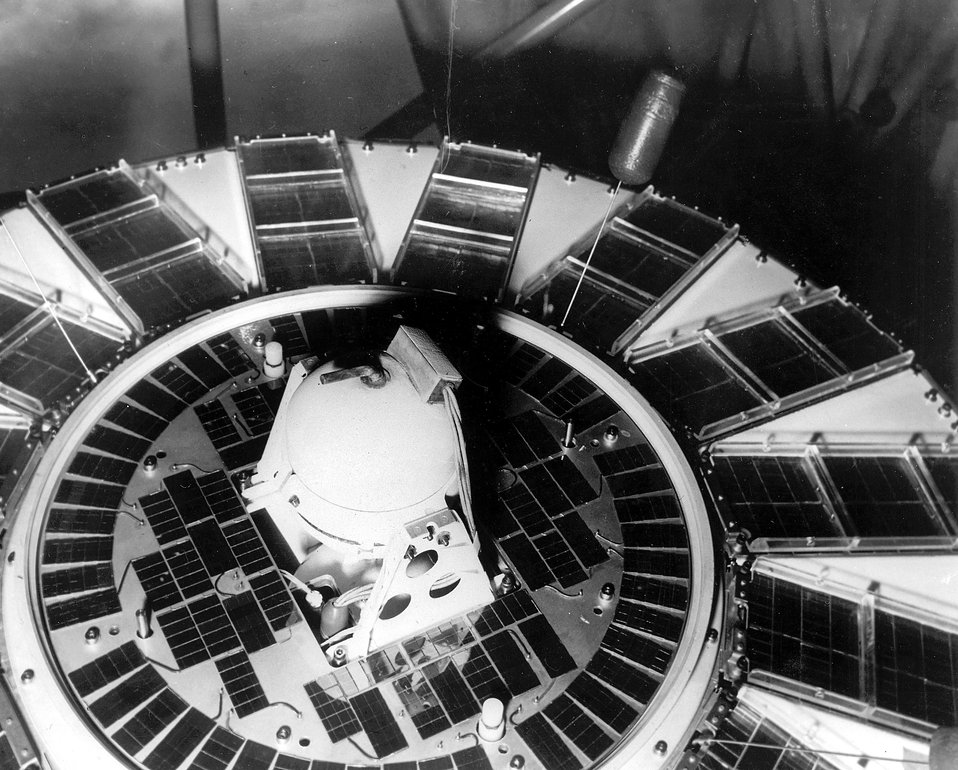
The tiny SNAP atomic generator is fastened to the base of the Navy's Navigational satellite for vibration tests at Johns Hopkins' Applied Physics Laboratory.